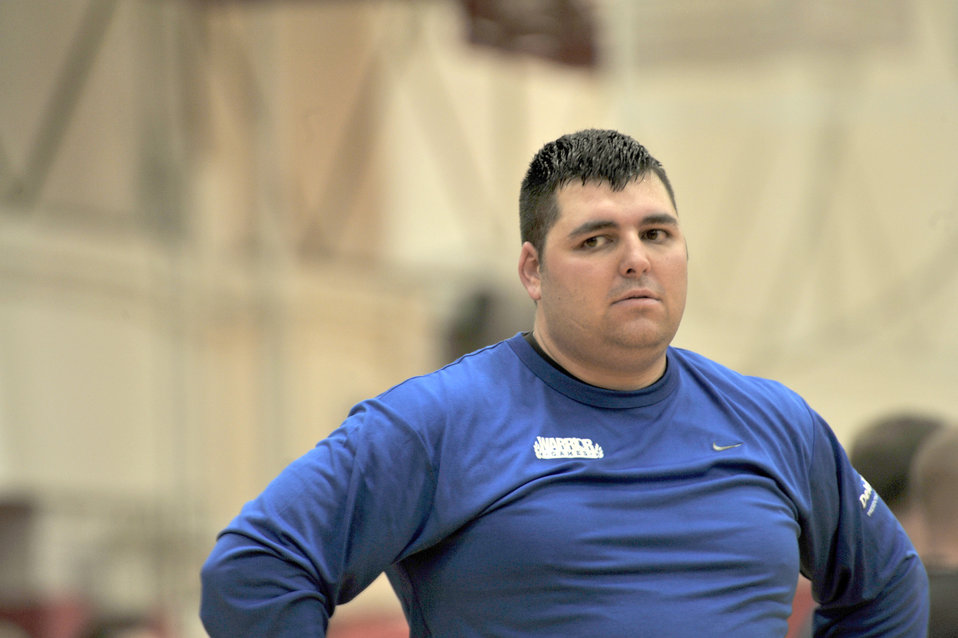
Former Air Force medic competes in Warrior Games

Ricky Tackett takes a break from the Air Force team during the Warrior Games volleyball match against the Army May 12, 2010 at the Olympic Training Center, Colorado Springs. The Air Force went on to win the game 15-7. The Warrior Games competition began May 10 and finishes on May 14, 2010 at the U.S. Olympic Training Center in Colorado Springs.